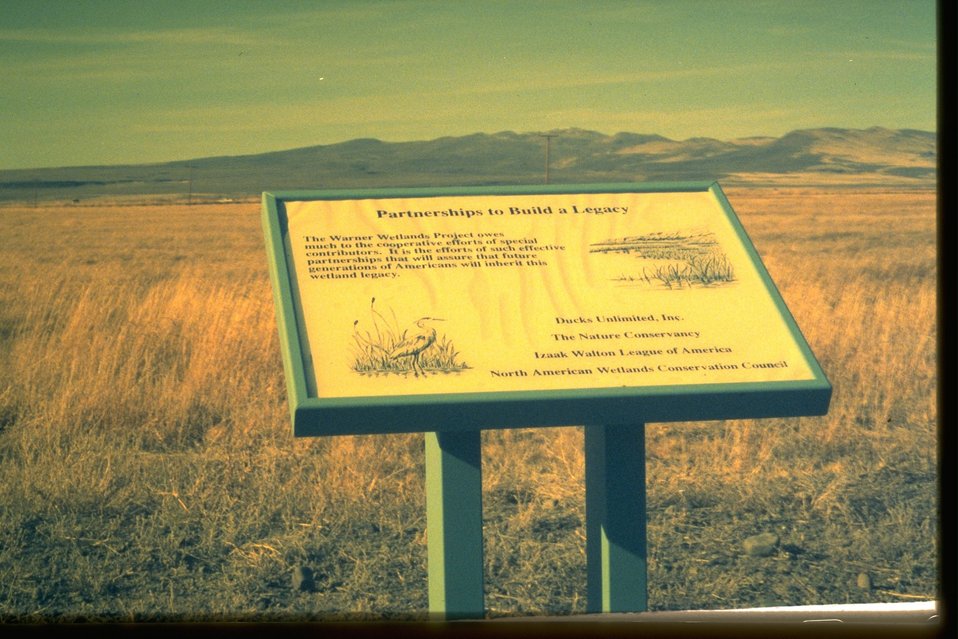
Viewing blinds, interpretive panels, and kiosks at the Warner Wetlands.